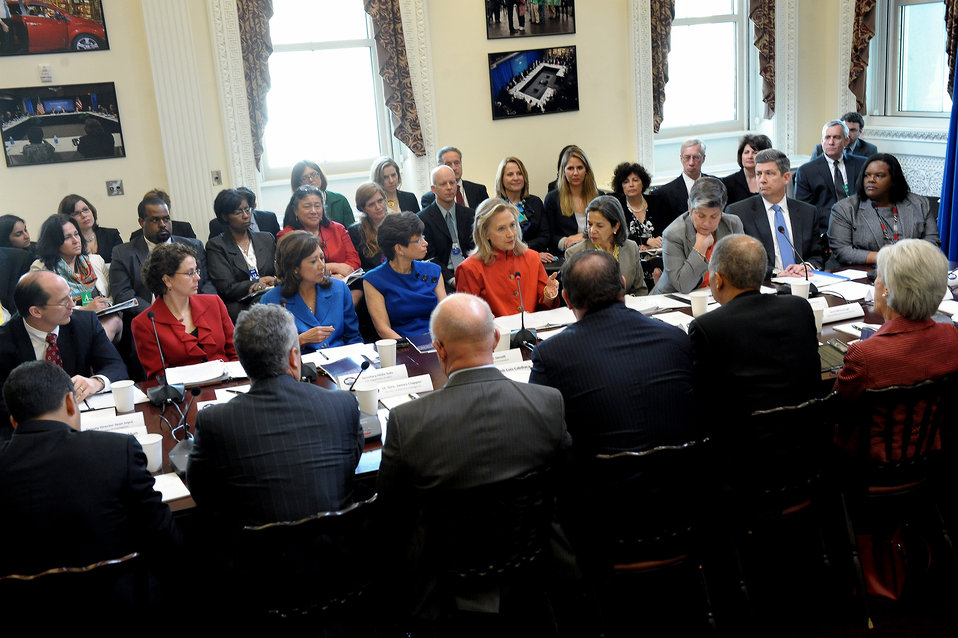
Secretary Clinton Chairs the Interagency Task Force to Monitor and Combat Trafficking in Person

U.S. Secretary of State Hillary Rodham Clinton chairs the President’s Interagency Task Force to Monitor and Combat Trafficking in Persons in Washington, D.C. on March 15, 2012.